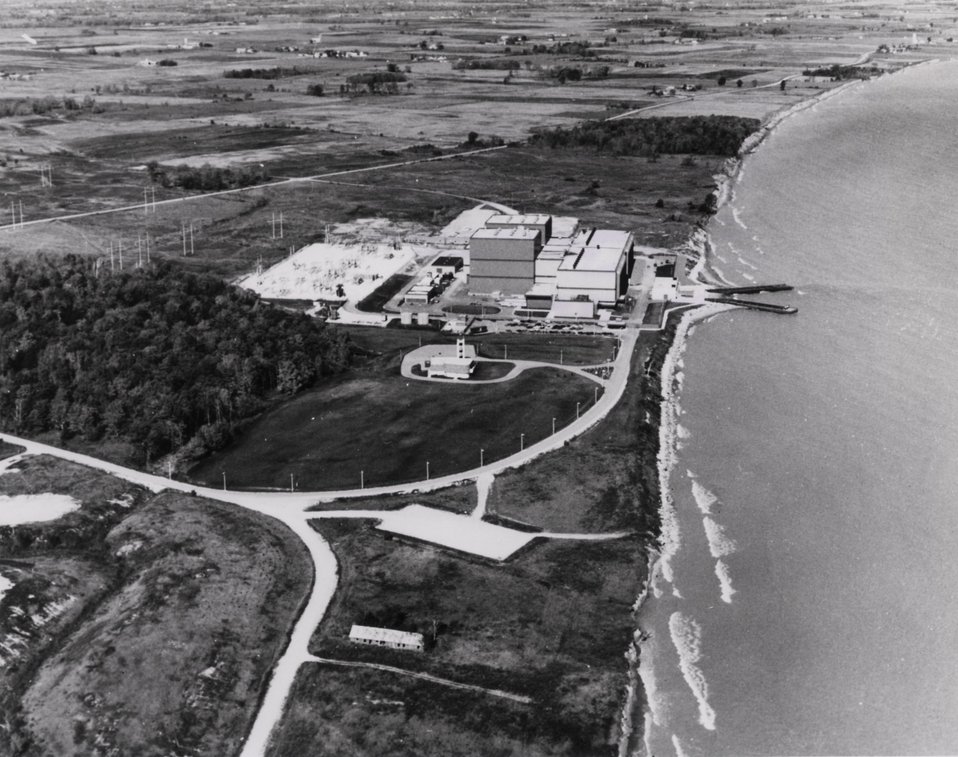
POINT BEACH NUCLEAR PLANT UNITS 1& 2...is operated by Wisconsin Electric Power Co. and Wisconsin Michigan Power Co. Circa 1973.